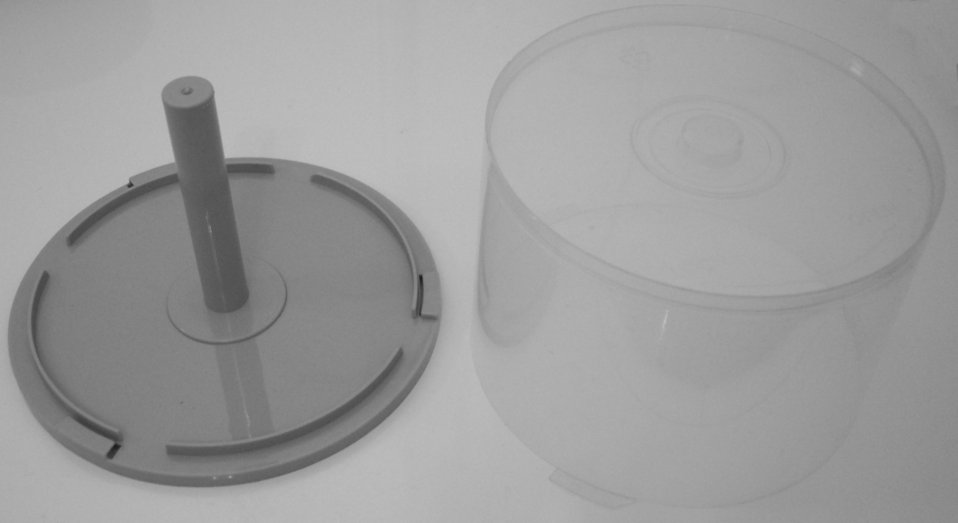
050er offen